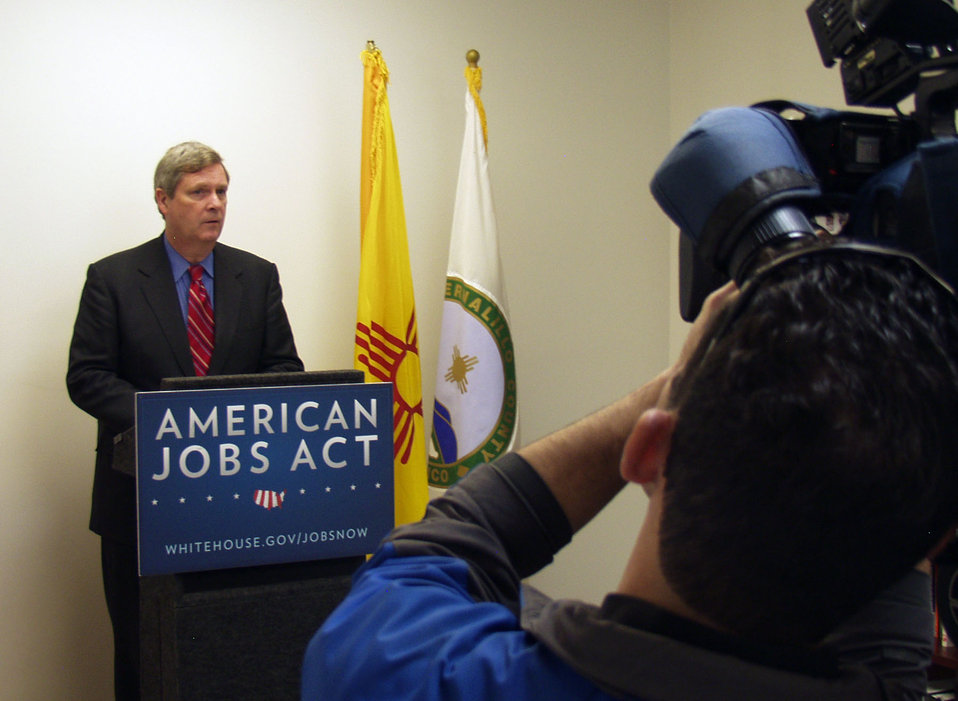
Agriculture Secretary Tom Vilsack speaks to the media after the business roundtable held at the South Valley Economic Development Center (SVEDC) in Albuquerque, NM, on Thursday, December 8, 2011. Agriculture Secretary Tom Vilsack joined business and community leaders to discuss the Administration's strategy to strengthen the U.S. economy and to highlight what passage of the American Jobs Act will mean for New Mexico.